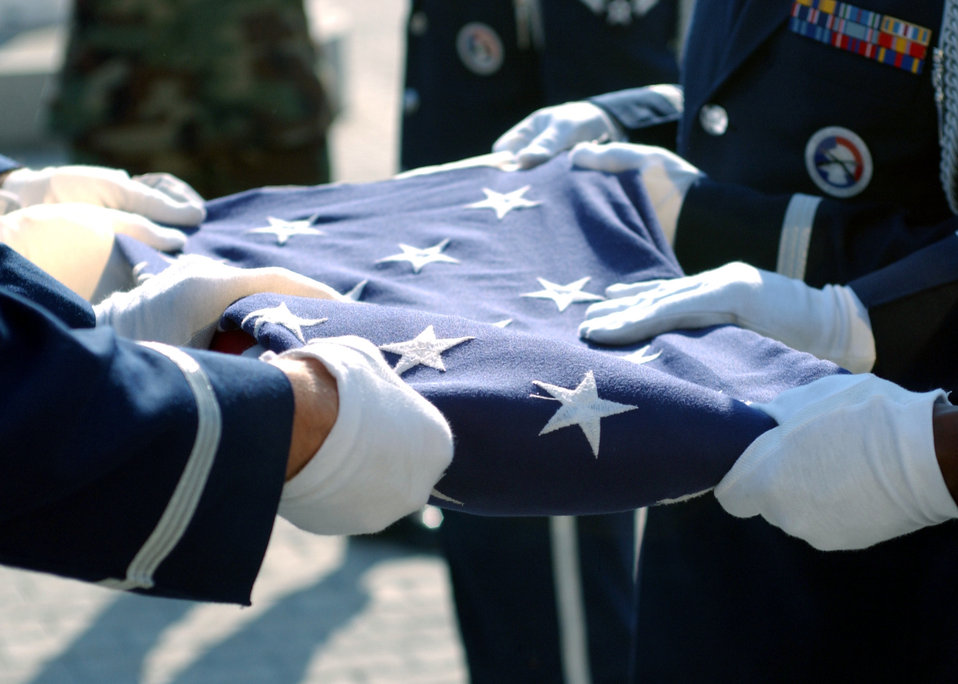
Remembering those who served

INCIRLIK AIR BASE, Turkey -- Members of the 39th Air Base Honor Guard fold the American flag during the Prisoners of War or Missing in Action retreat ceremony here Sept. 14. The ceremony honored the Airman, Seaman, Marines and Soldiers who were POWs or MIAs during every American war since World War I.